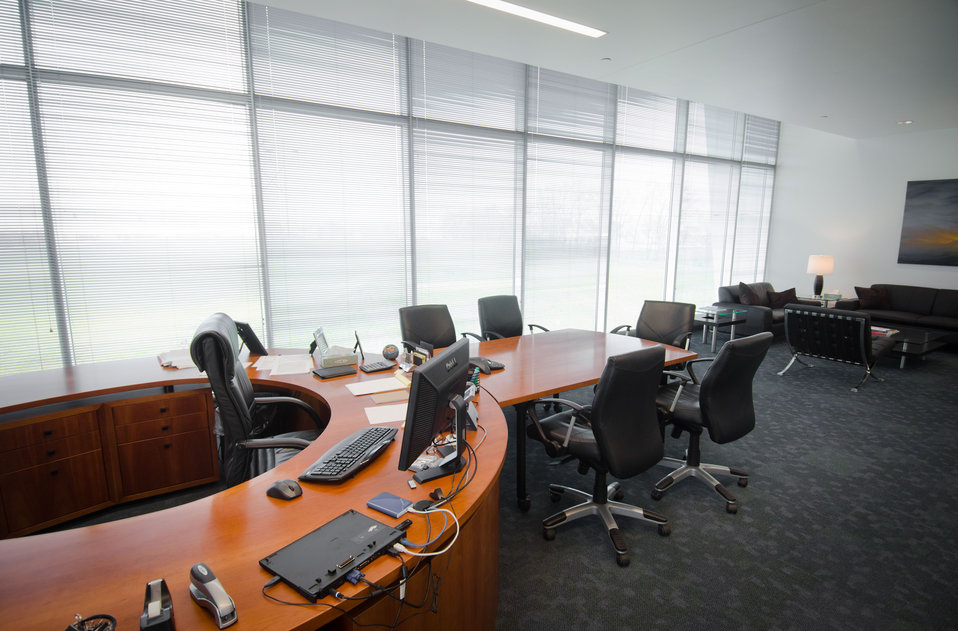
Executive office at Unilife, a medical device company focused on the design, development, manufacture and supply of a proprietary range of retractable syringes on Monday, April 20, 2011 in York, PA. In partnership with Sanofi-aventis, Mikron Group, and MDMA, U.S. Department of Agriculture Rural Development was able to guarantee $18,000,000 through its Business and Industry Guaranteed Loan Program to construct a custom-built, global headquarters and commercial production facility in York, Pennsylvania. The 165,000 sq. ft. facility was completed in late 2010 and can accommodate future growth as well as the Company’s projected demand from pharmaceutical and healthcare companies for its proprietary range of Unifill ready-to-fill (prefilled) and Unitract general purpose safety syringes. Stage one of the facility is designed to accommodate the production of up to 400 million Unilife syringes per year and to meet stringent pharmaceutical standards for primary drug containers. Adjacent to the manufacturing facility is Unilife’s global headquarters that support administrative, marketing, new product development, quality laboratories and other operational functions. Unilife, which first arrived in Pennsylvania in 2006. The company has doubled its employees for the past three years. There are approximately 150 employees, and they expect to double the number by 2015.